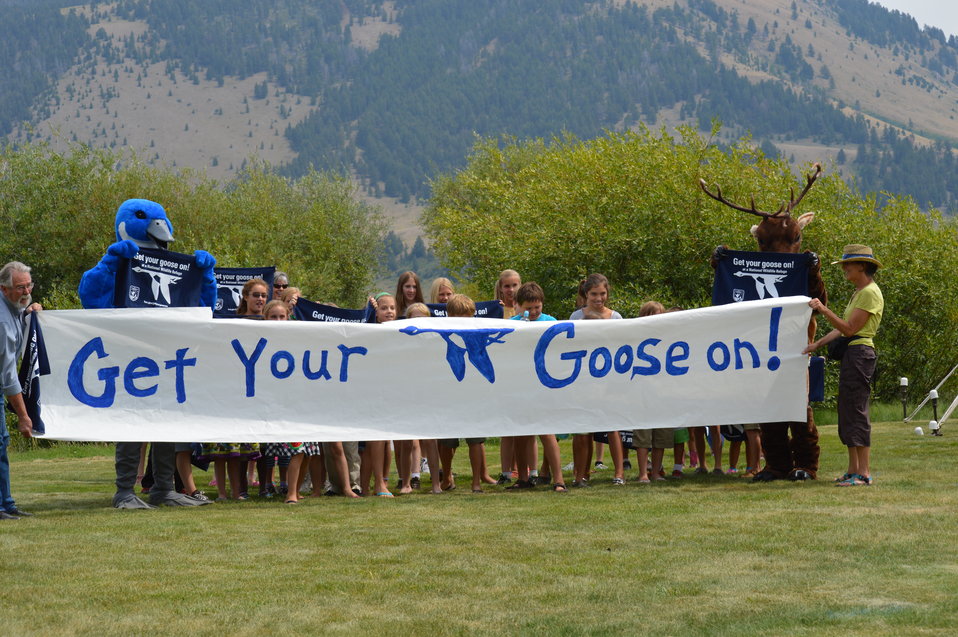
Get Your Goose On! - National Elk Refuge Style

On August 10, 2012 the U.S. Fish and Wildlife Service and Partners celebrated the 100 year anniversary of the establishment of the National Elk Refuge. In these photos, young attendees, along with Puddles the Blue Goose and the National Elk Refuge's mascot, showed us how to Get Your Goose On! with style.